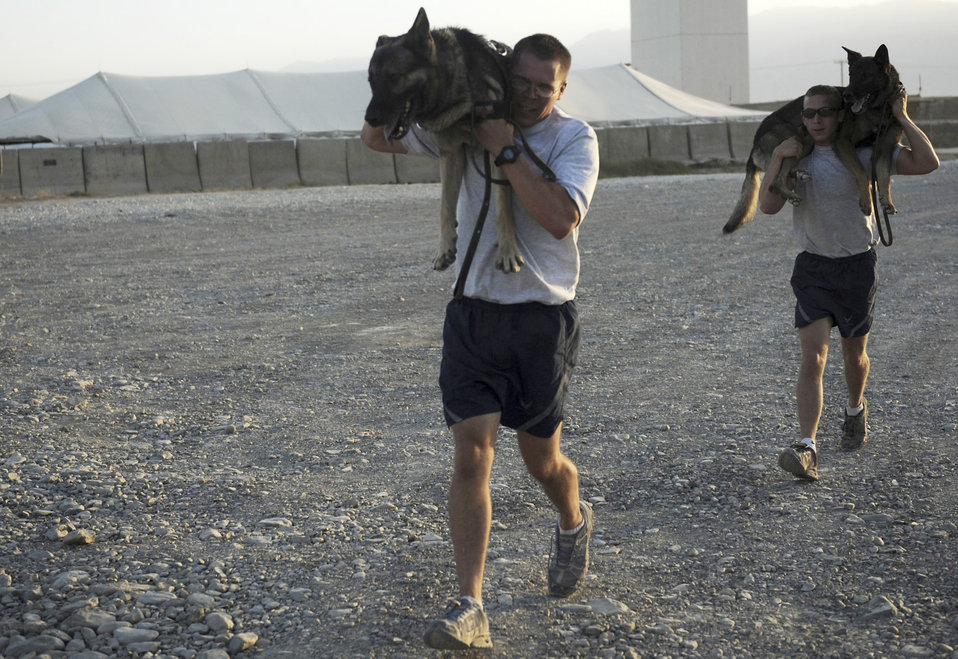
Dog handler team 'lose an Airman'

Staff Sgts. Justin Kitts and Scott Carpenter carry their dogs, Mayo and Kane, through the last leg of a training run Aug. 9 at Bagram Airfield, Afghanistan. Sergeants Kitts and Carpenter are dog handlers with the 455th Expeditionary Security Forces Squadron and deployed from Luke Air Force Base, Ariz., and Peterson AFB, Colo., respectively. K-9 units patrol the base and inspect mail, luggage, and vehicles.